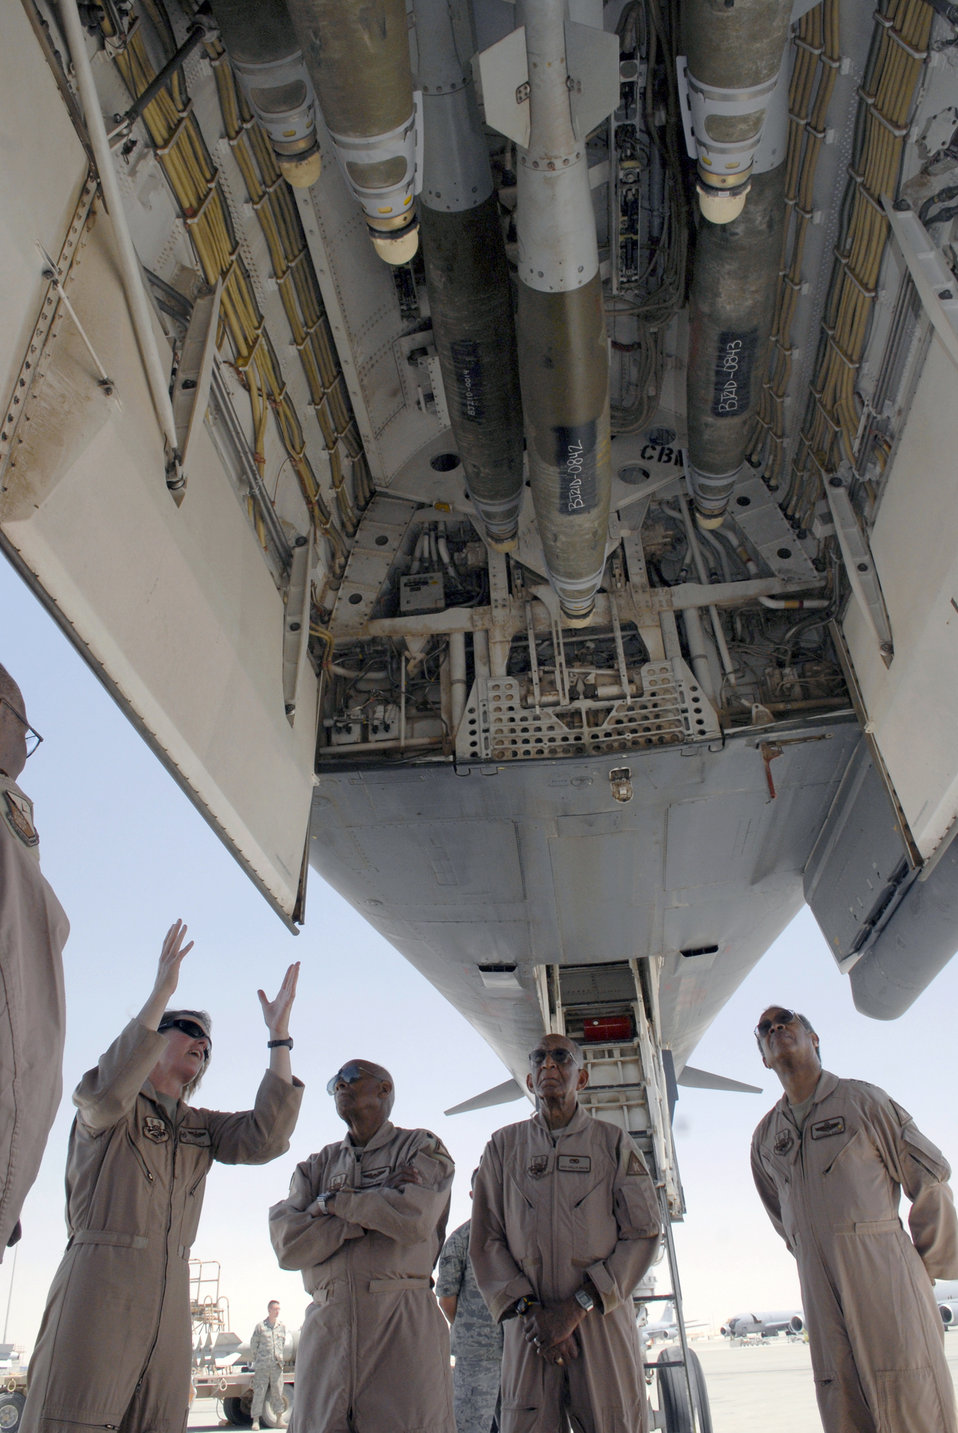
Tuskegee Airmen visit Southwest Asia

Lt. Col. Jen Fullmer, commander of the 9th Expeditionary Bomber Squadron, shows the forward bomb bay of a B-1B Lancer to retired Lt. Col. Alexander Jefferson, Staff Sgt. Phillip Broom and retired Lt. Gen. Russell Davis during their visit on base April 22 in Southwest Asia. Colonel Jefferson and Sergeant Broom are two original Tuskegee Airmen, and General Davis is the president of the nonprofit Tuskegee Airmen, Inc.